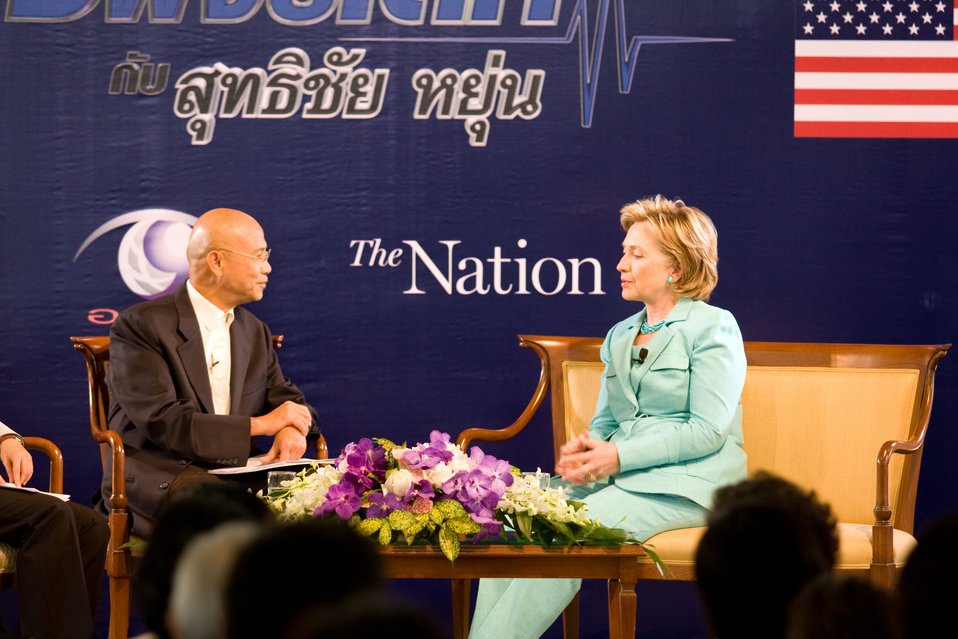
Secretary Clinton Interviews With the Nation Group

U.S. Secretary of State Hillary Rodham Clinton during an interview by Suthichai Yoon and Veenarat Laohapakakul at Phyathai Palace in Bangkok, Thailand July 22, 2009.